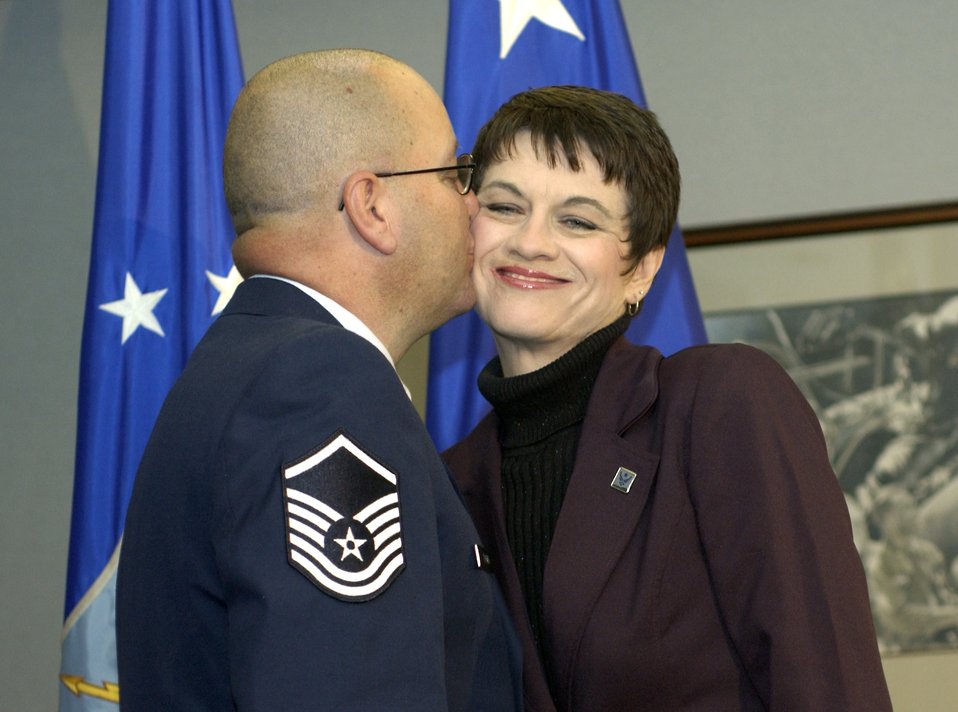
Air Force honors spouses with pin

WASHINGTON -- Sandra Forney gets a kiss from her husband, Master Sgt. Glenn Forney, after receiving her spouse pin during a Pentagon ceremony Nov. 8. The ceremony launched the spouse pin program. The pin is designed to recognize and thank spouses who support the efforts of Airmen stationed worldwide. Sergeant Forney is an Air National Guardsman with the 113th Logistics Readiness Squadron at Andrews Air Force Base, Md.